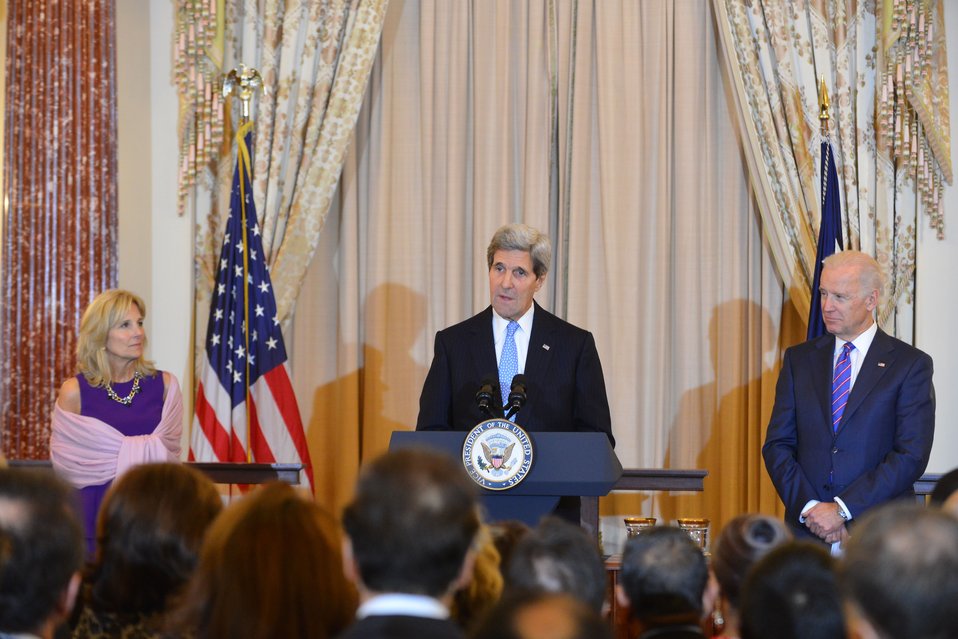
Secretary Kerry Delivers Remarks at the Holiday Reception for the Diplomatic Corps and Their Spouses

Flanked by Second Lady of the U.S., Dr. Jill Biden, and Vice President Joseph Biden, U.S. Secretary of State John Kerry delivers remarks at the Holiday Reception for the Diplomatic Corps and their spouses at the U.S. Department of State in Washington, D.C., on December 9, 2013.